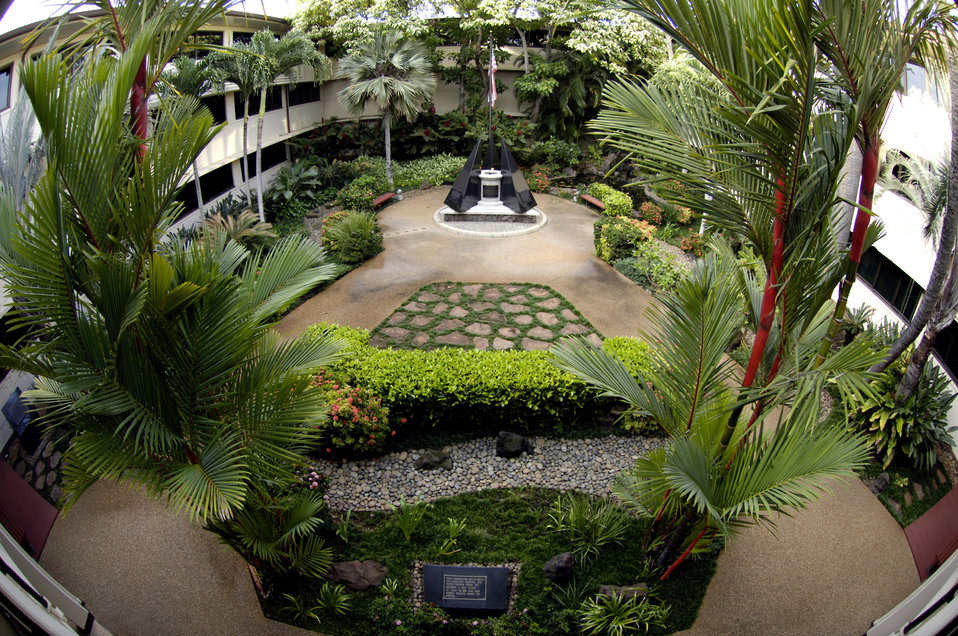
Pearl Harbor remembered

HICKAM AIR FORCE BASE, Hawaii (AFPN) -- The Courtyard of Heroes in the Pacific Air Forces headquarters building here is dedicated to the servicemembers who lost their lives during the Dec. 7, 1941 surprise Japanese attack on military installations on the Hawaiian island of Oahu.